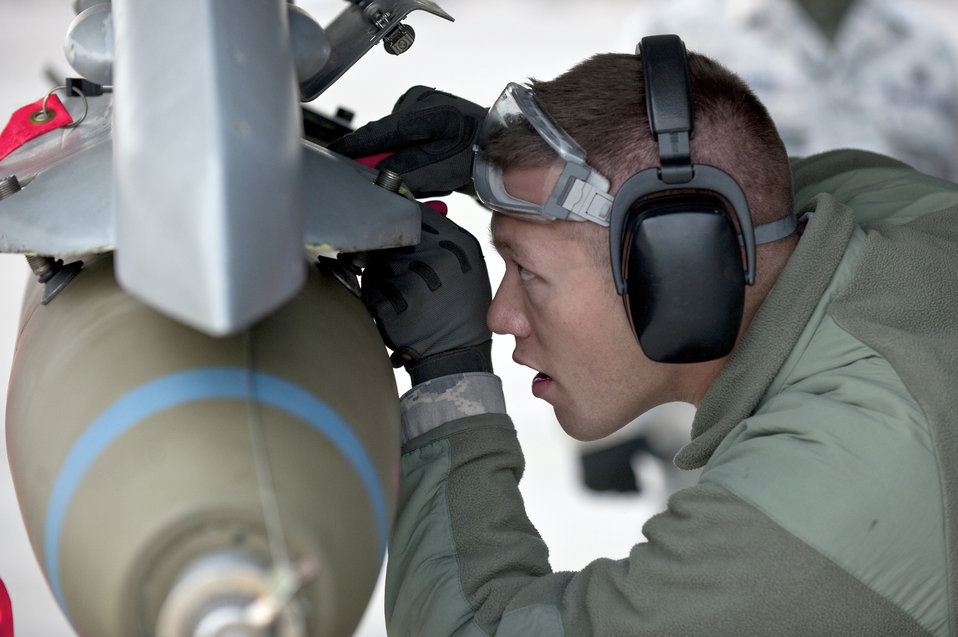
Nellis weapons load competition

Airman 1st Class Lucas Wolf secures an MK-82 bomb on an F-16 Fighting Falcon during a weapons load competition Jan. 7, 2011, at Nellis Air Force Base, Nev. Weapons load competitions are conducted quarterly to keep Airmen sharp and recognize superior performers. Weapons load teams are evaluated for their use of the checklist, safety and overall speed. Airman Wolf is an aircraft armament systems apprentice with the 57th Aircraft Maintenance Squadron.